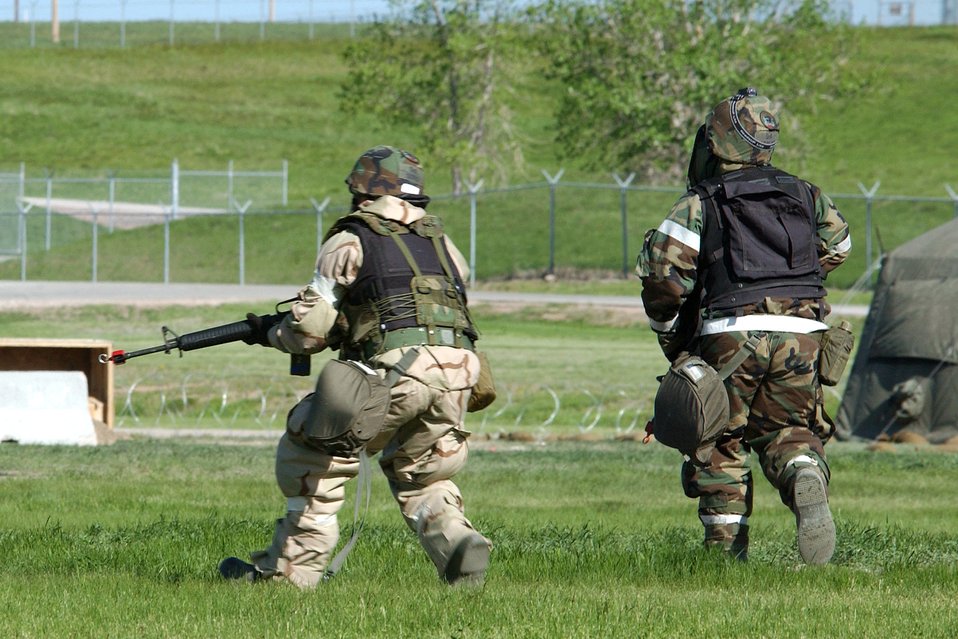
Operational readiness exercise

Airmen from the 28th Bomb Wing simulate a ground attack during an operational readiness exercise at Ellsworth Air Force Base, S.D., on Wednesday, May 24, 2006.